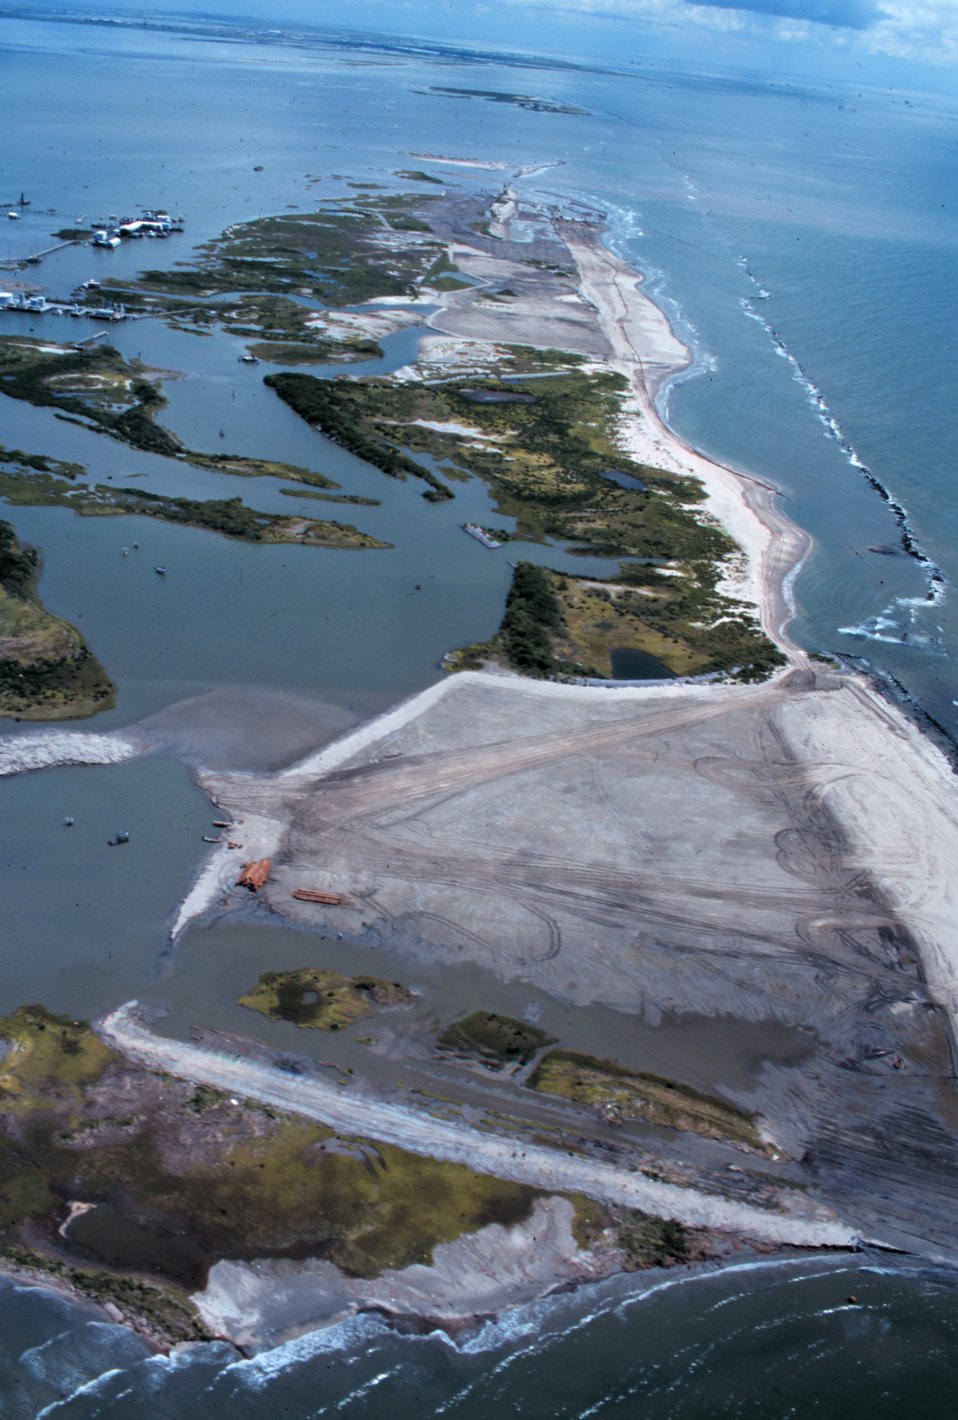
An aerial view of East Timbalier Island, the Gulf of Mexico is on the right. The sandy brown areas in the middle of the photograph are the newly created marsh and dune habitat.